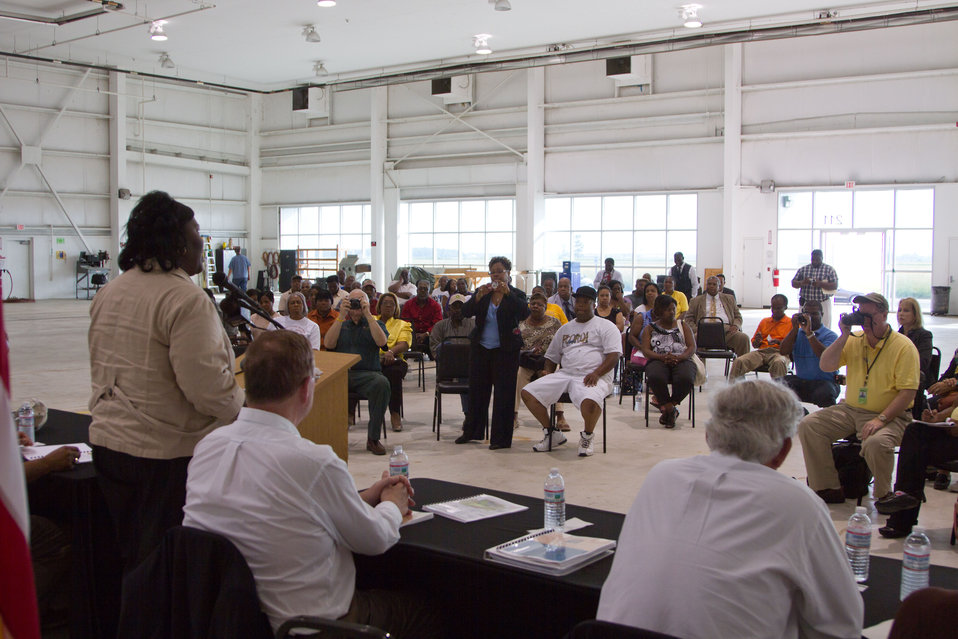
U.S. Department of Agriculture Mississippi Rural Development State Director Trina N. George addresses the gathered farmers during an outreach event at Tunica Airport in Mississippi on Thursday, May 19, 2011. Hosting the event was Congressman Bennie Thompson (left); also there to support the farmers were Under Secretary for Rural Development Dallas Tonsager (second from right); Acting Under Secretary Farm and Foreign Agriculture Service Michael Scuse (right); and other government officials that were available to answer questions and assist people in getting help is available to them.